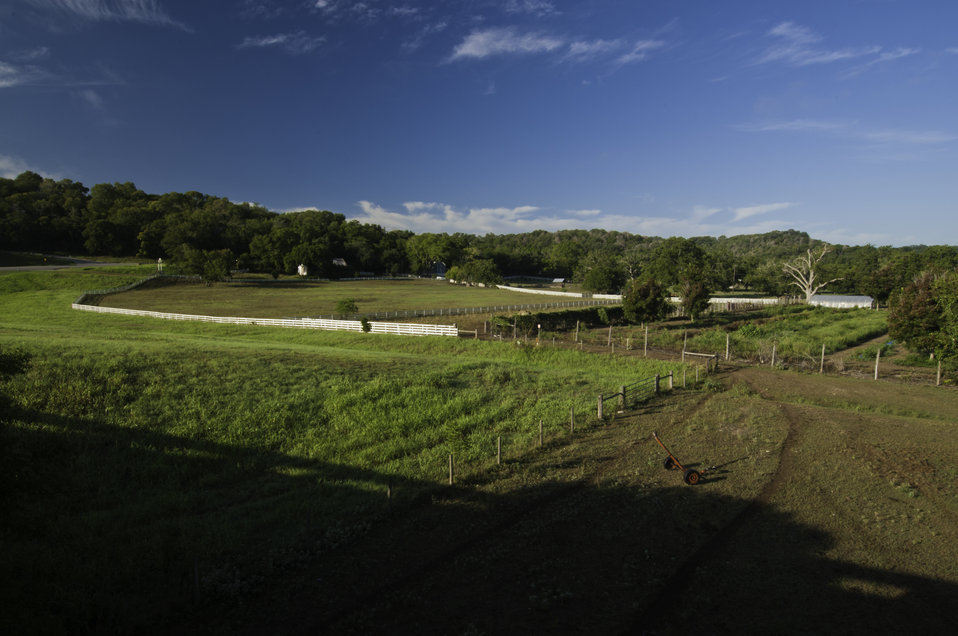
The sun shines down on a Texas farm on Aug. 23, 2013.